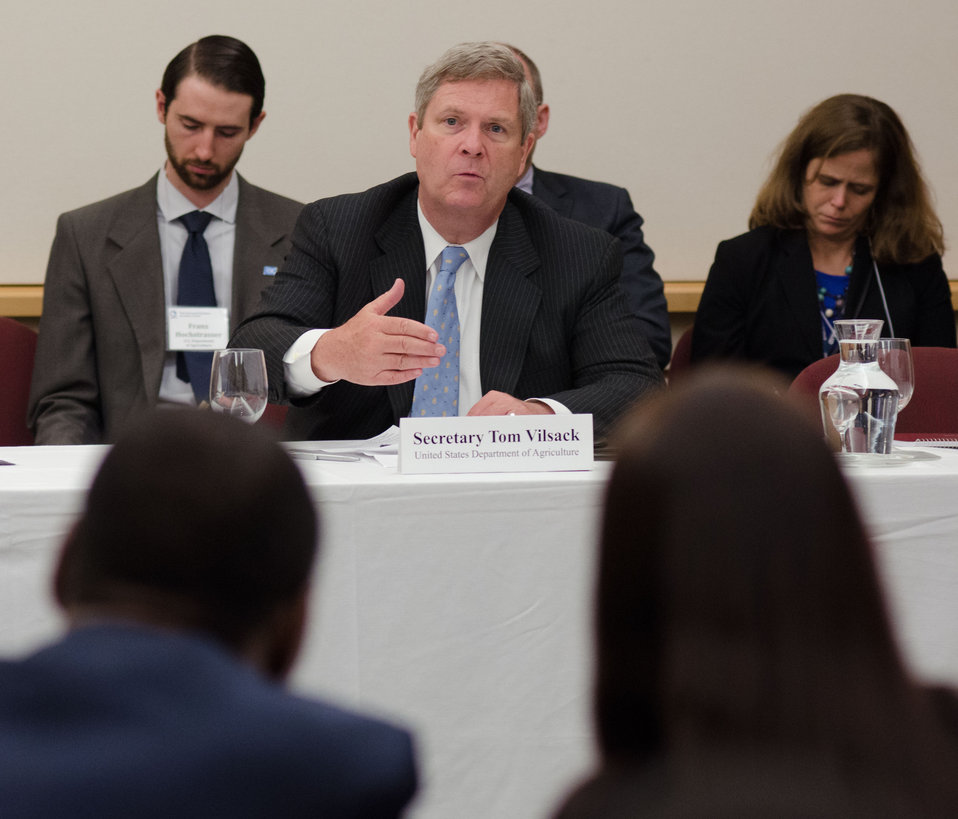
Agriculture Secretary Tom Vilsack makes remarks at the African Heads of State conference at the Ronald Reagan Federal Building in Washington, D.C., on Friday, May 18, 2012.